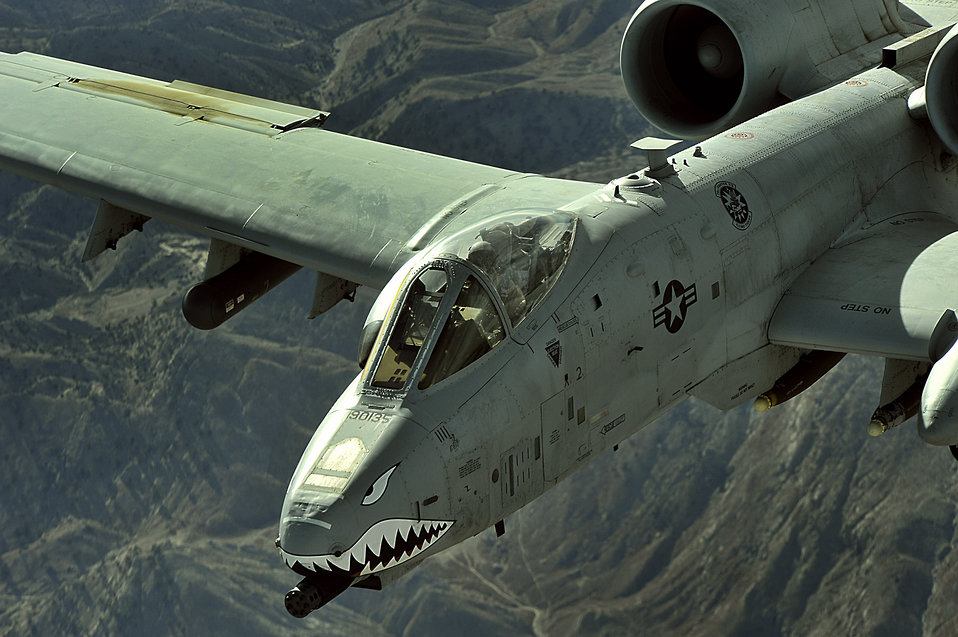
Dec. 13 airpower summary: A-10s remain vigilant

An A-10 Thunderbolt II flies a combat support mission over Afghanistan in support of Operation Enduring Freedom recently. A-10s conduct shows of force to deter enemy activities and provide armed aerial overwatch.